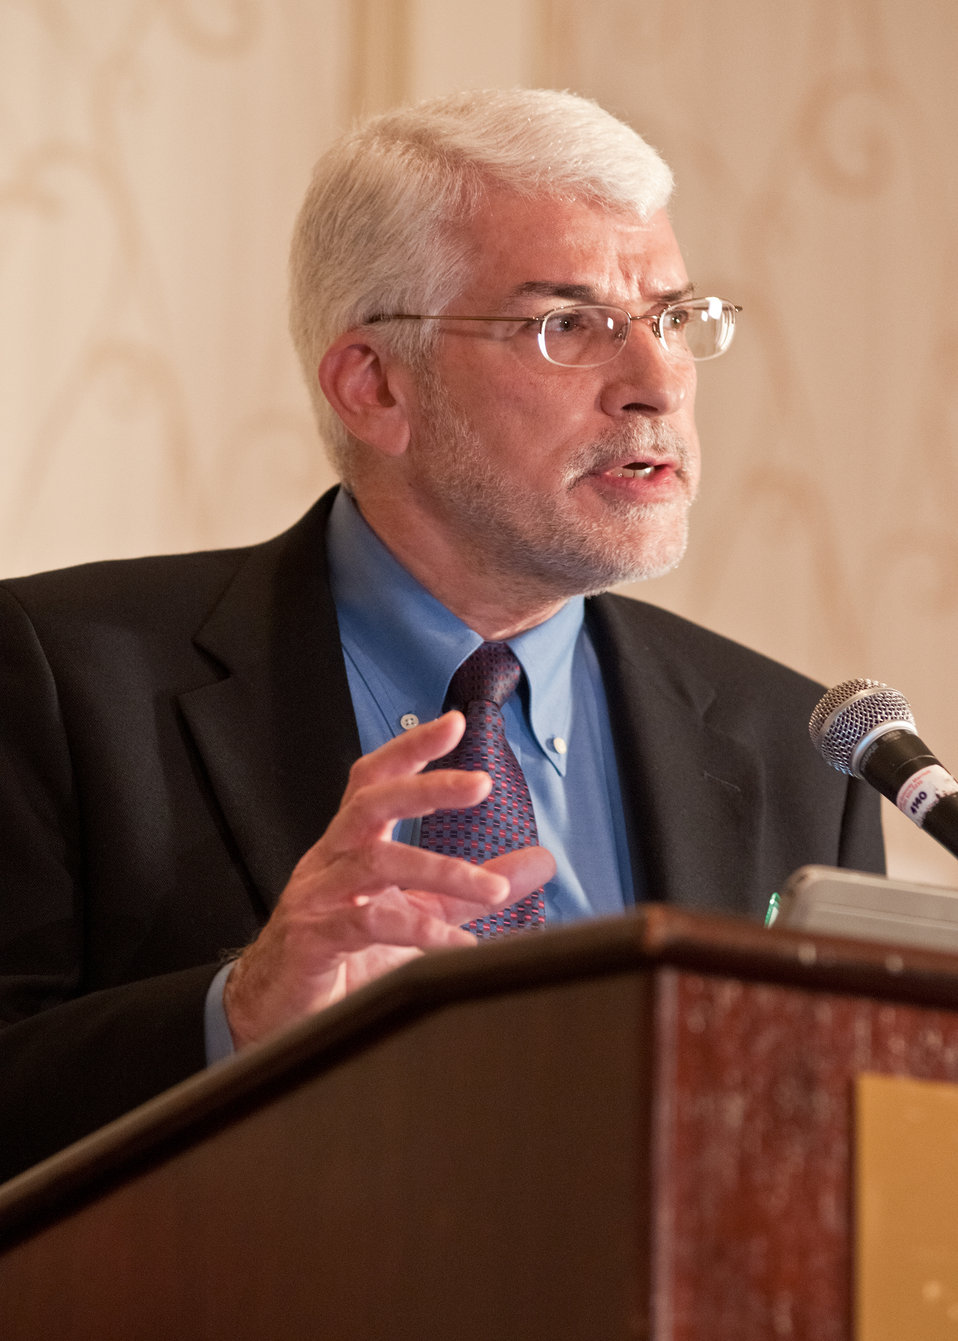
Dr. Keith Collins, Former United States Department of Agriculture Chief Economist, 1994-2008 discusses the history and future of the USDA Economic Research Service as an excellent resource for policymakers during the “ERS: Celebrating 50 Years of Excellence in Economic Research” session at the World Agricultural Outlook Board Forum in Crystal City, VA, on Friday, February 25, 2011.